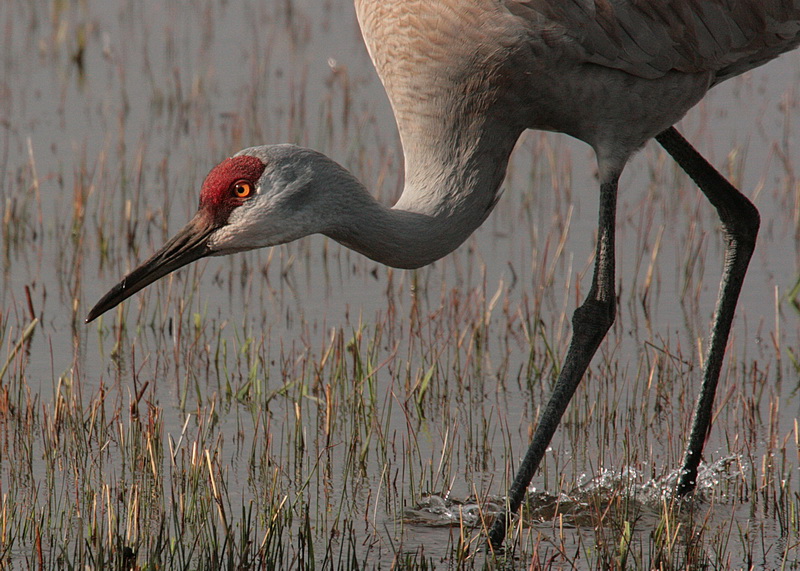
Greater Sandhill Crane at Malheur Refuge

A greater sandhill crane feeds in the wetlands at Malheur National Wildlife Refuge. More than 200 pairs of sandhills nest on the refuge each year. They begin arriving in Feburary/March and are reclusive when they begin nesting. But they can be seen in their nesting territories from late June until the crane colts fledge in September.